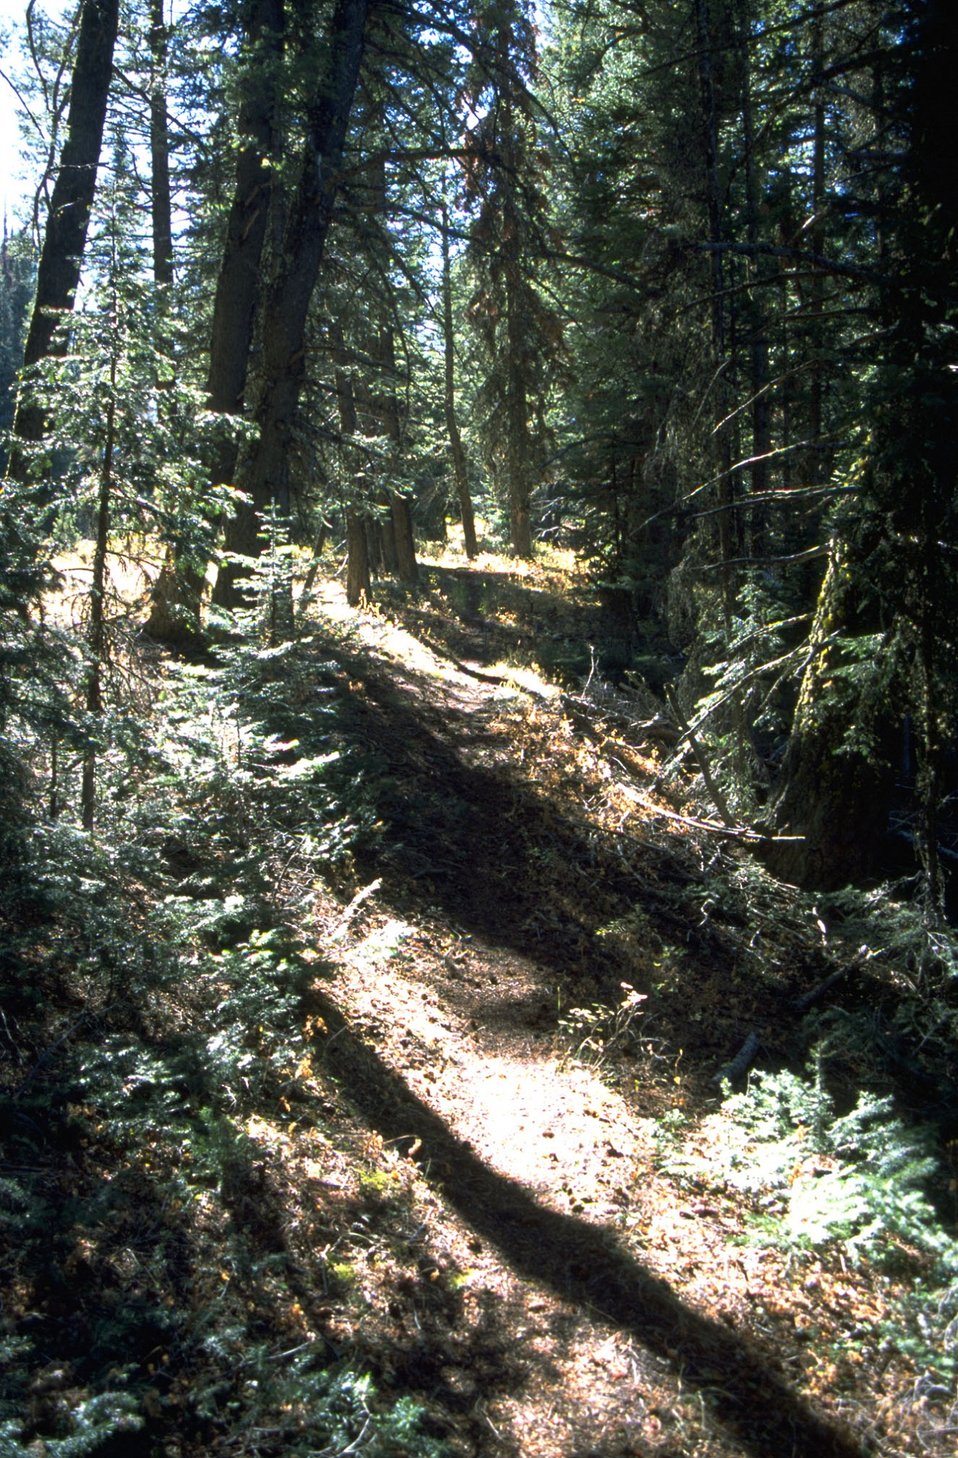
Trail in forested area